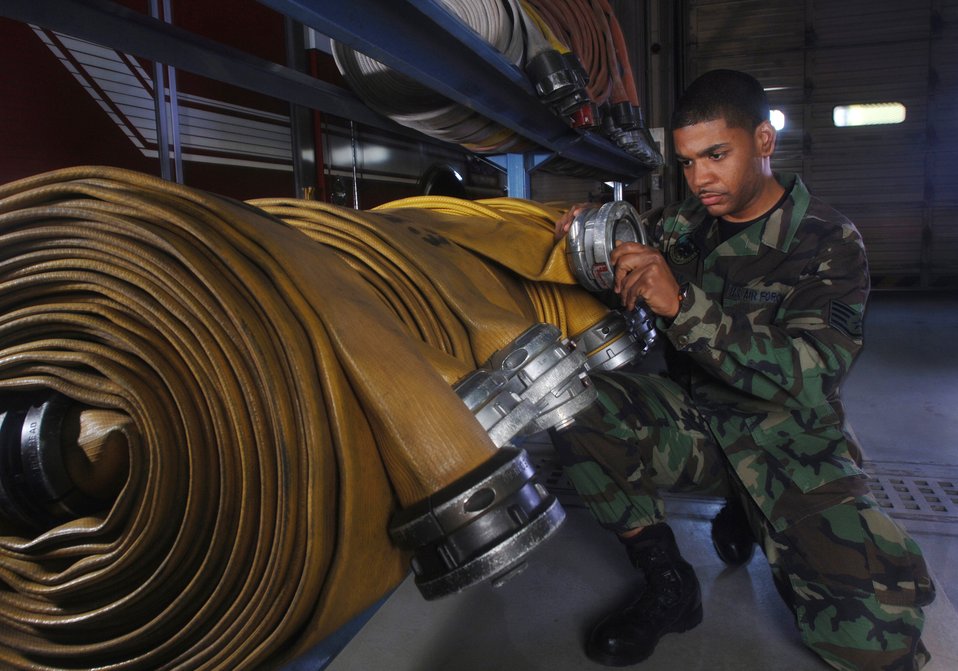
Fighting fire

Staff Sgt. Gary Nunley inspects water hoses for defects at Yokota Air Base, Japan, on Friday, April 28, 2006. Sergeant Nunley is a firefighter with the 374th Civil Engineer Squadron.